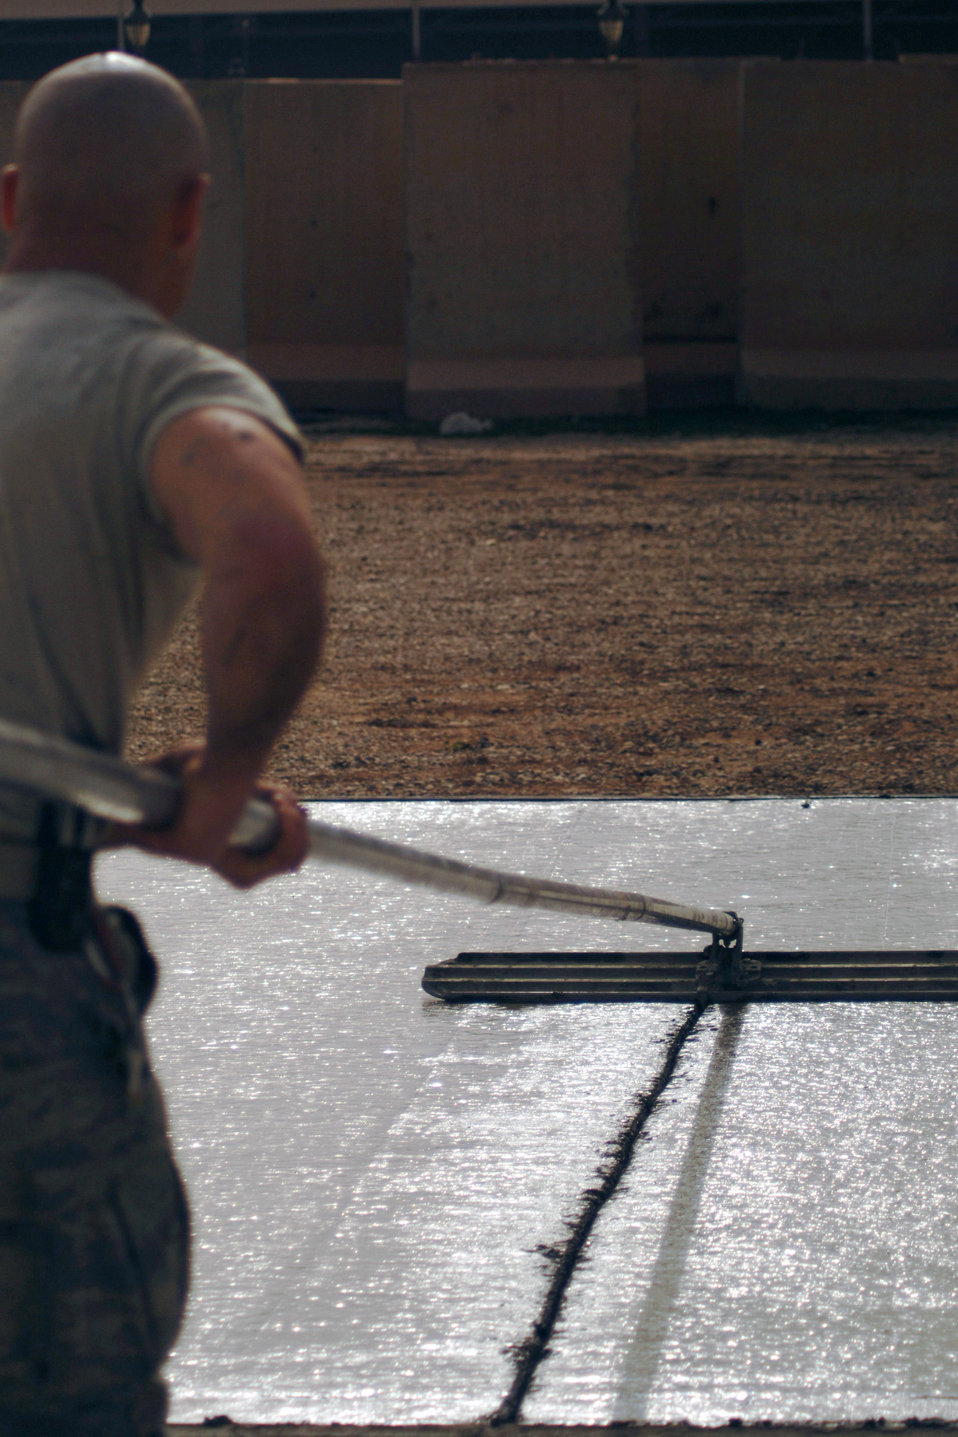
Set in stone

Staff Sgt. Jason Hopper uses a cement-finishing tool called a bull float Feb. 15 to even out the surface of a concrete pad during a construction project at Joint Base Balad, Iraq. He helped complete a 76-meter concrete pad. Sergeant Hopper, a native of Strongs, Mich., is a pavement and construction equipment operator with the 332nd Expeditionary Civil Engineer Squadron and is deployed from Elmendorf Air Force Base, Alaska.